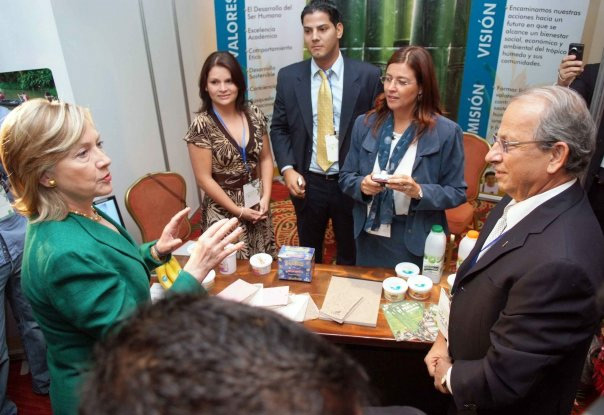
Secretary Clinton With EARTH University Students

U.S. Secretary of State Hillary Rodham Clinton speaks with EARTH University students at the Pathways to Prosperity Conference in San José, Costa Rica, March 4, 2010.